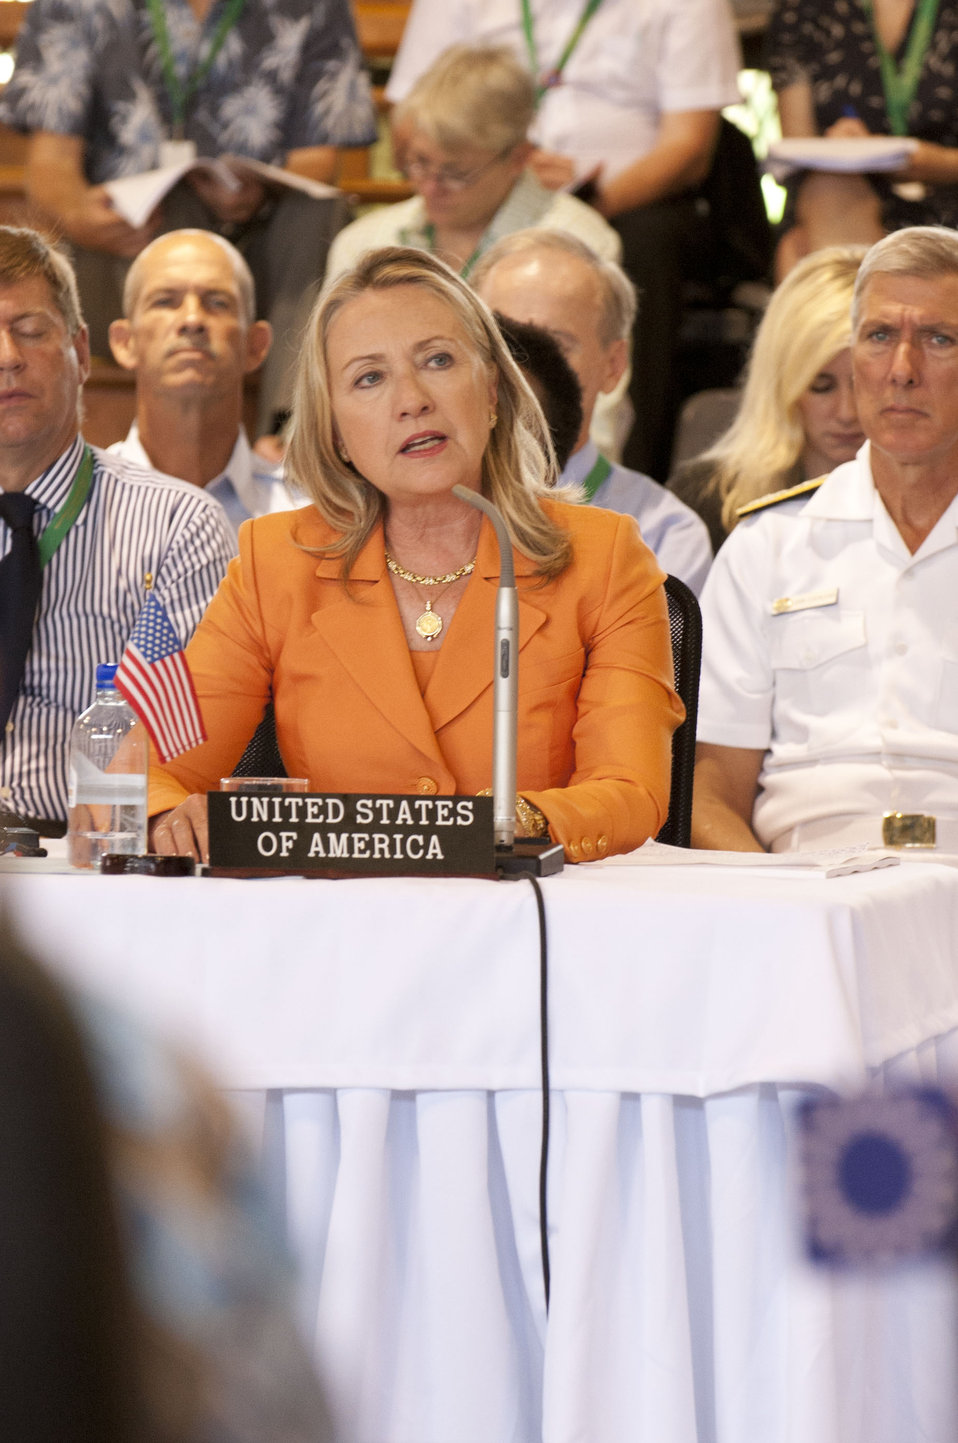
Secretary Clinton Delivers Remarks at the Pacific Islands Forum

U.S. Secretary of State Hillary Rodham Clinton delivers remarks at the Pacific Islands Forum in the Cook Islands, August 31, 2012.